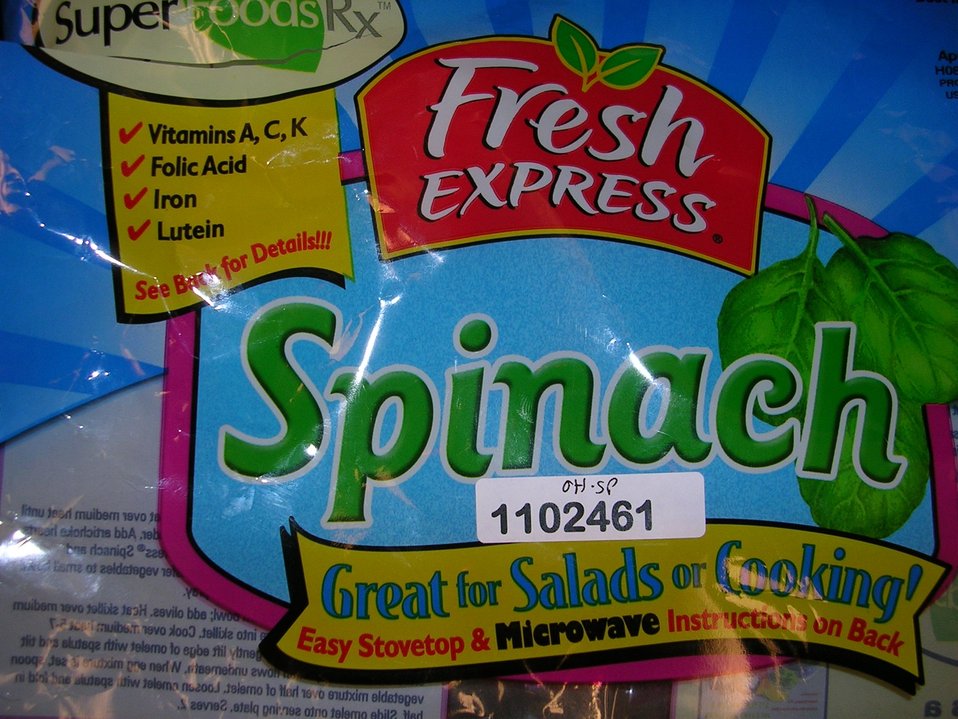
RECALLED - Fresh Express Spinach

April 5, 2011 - Product Recall - Fresh Express Spinach.